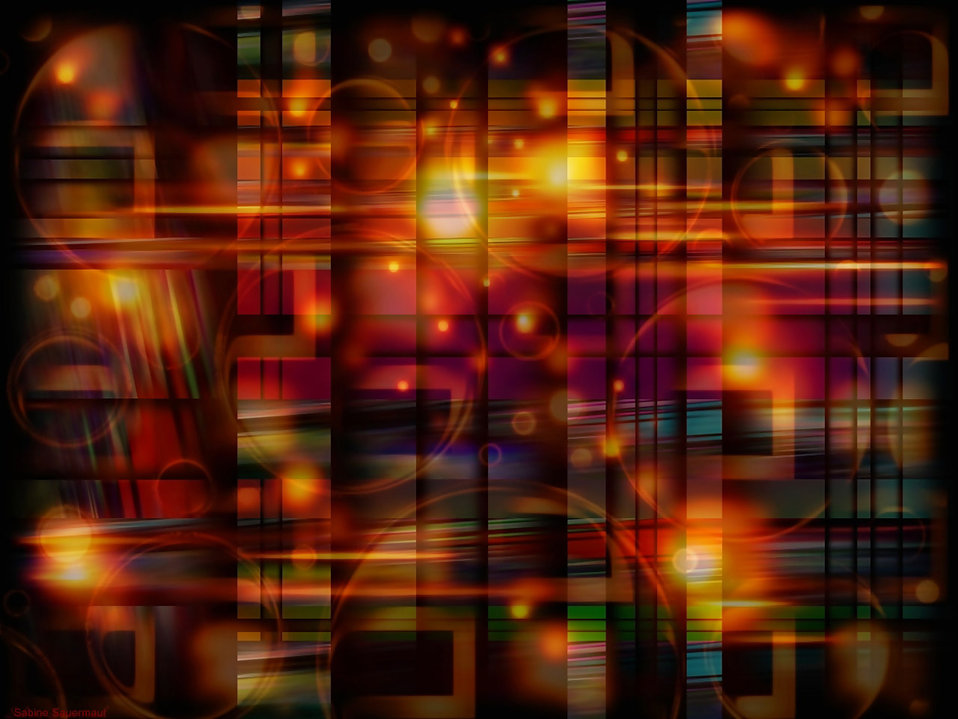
Dream colors

Picture collage.